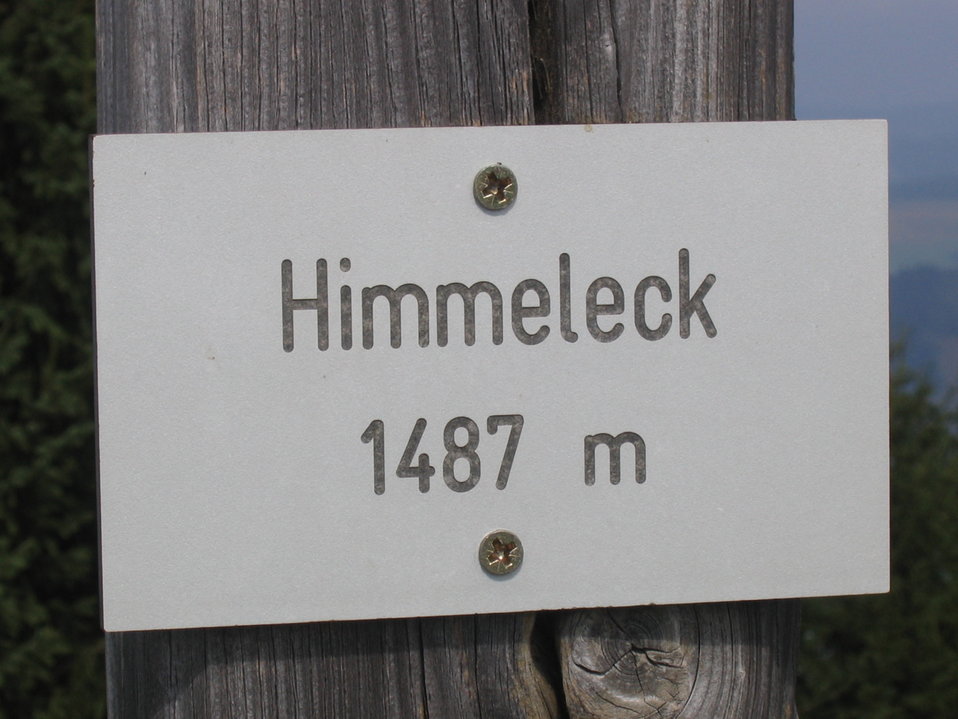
Deutsch: Schild am Gipfelkreuz des HIMMELECKs